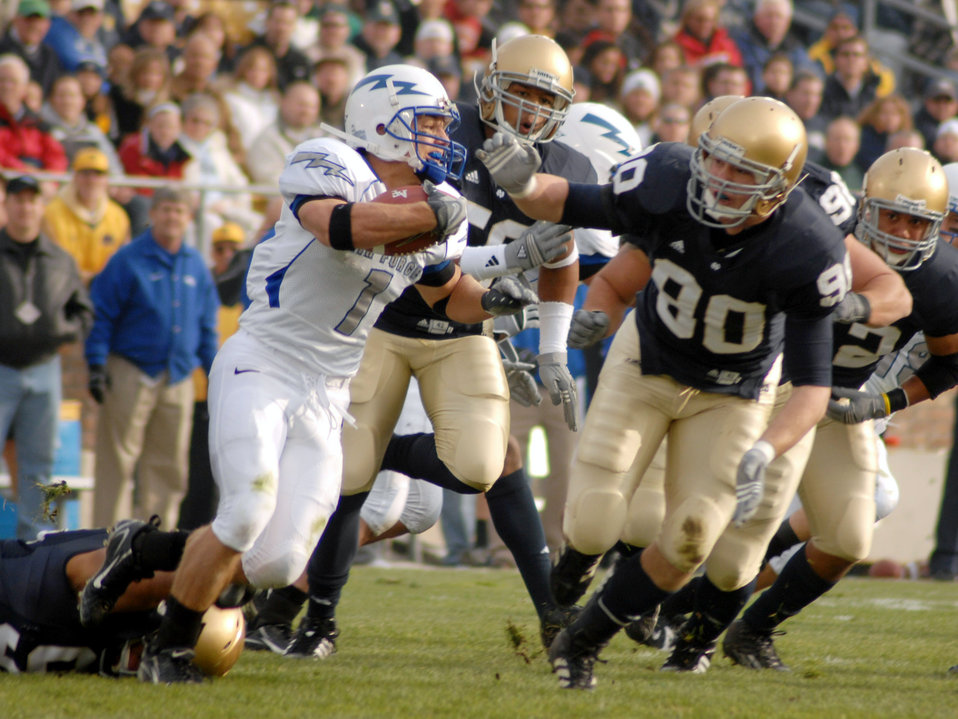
Academy accepts bid to Armed Forces Bowl

U.S. Air Force Academy z-back Chad Hall tries to evade Notre Dame's John Ryan in the Falcons' 41-24 victory over the Irish Nov. 10 in South Bend, Ind. U.S. Air Force Academy officials have accepted a bid to play in the Bell Helicopter Armed Forces Bowl on New Year's Eve at Fort Worth, Texas.